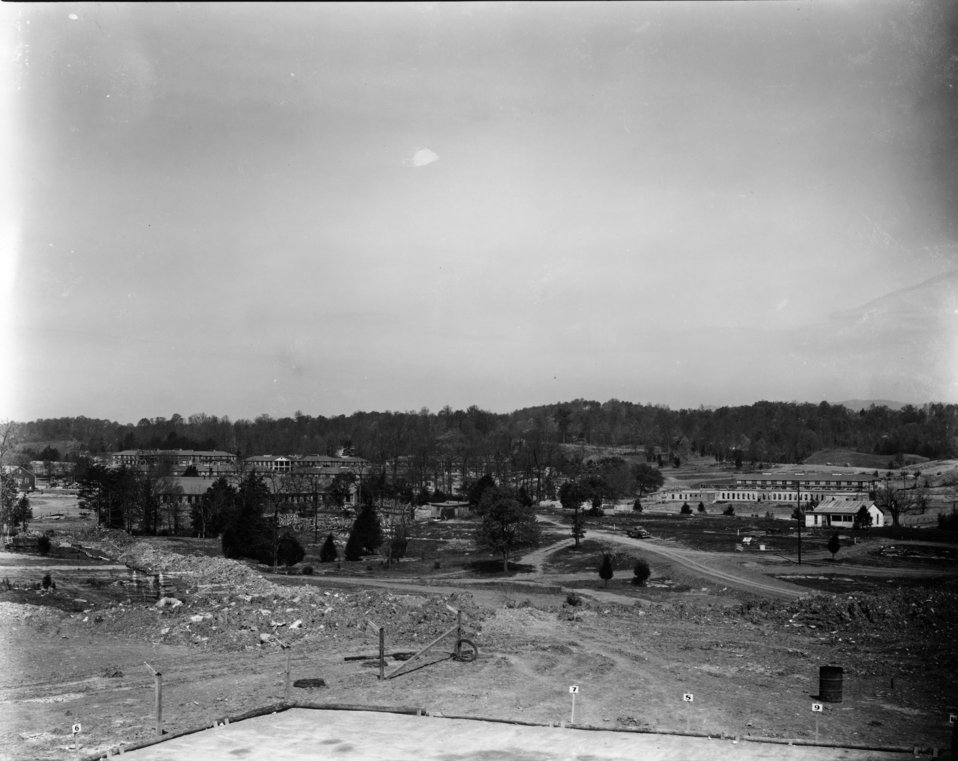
Construction activity at Oak Ridge